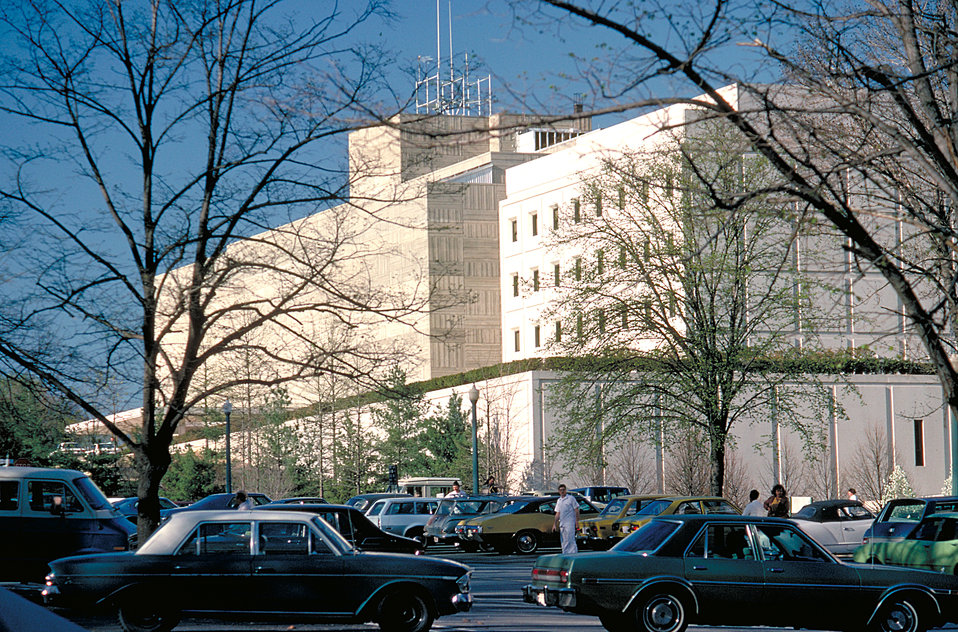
Armed Forces Institute of Pathology, Walter Reed Army Medical Center, Washington, DC.